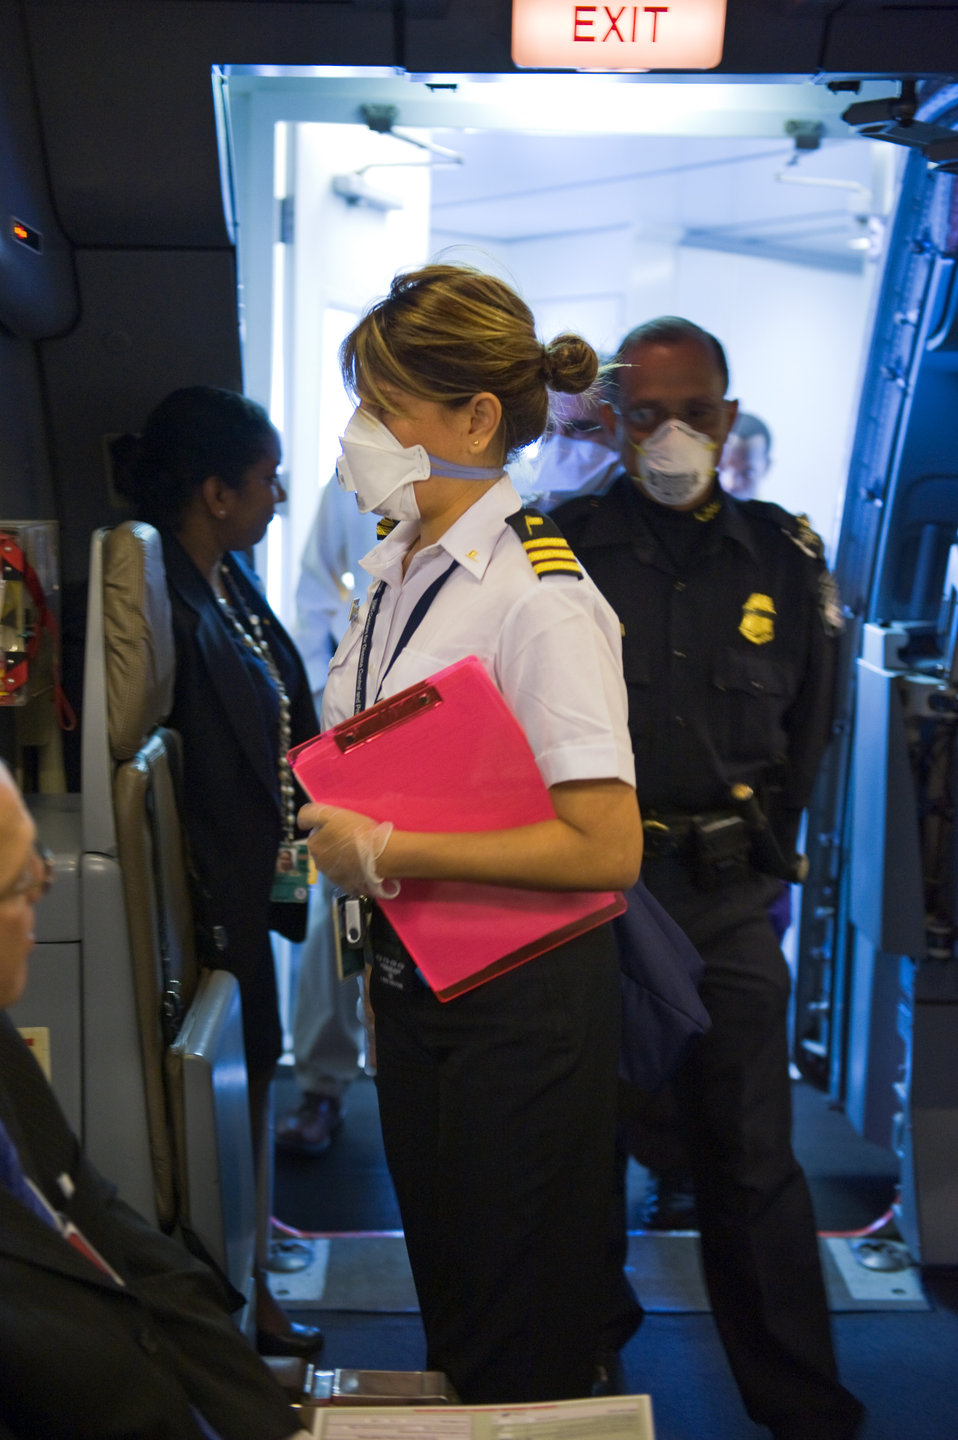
This image was captured during an October 2008 Preparedness Exercise involving a number of Federal and local agencies, including the Centers for Disease Control and Prevention (CDC).